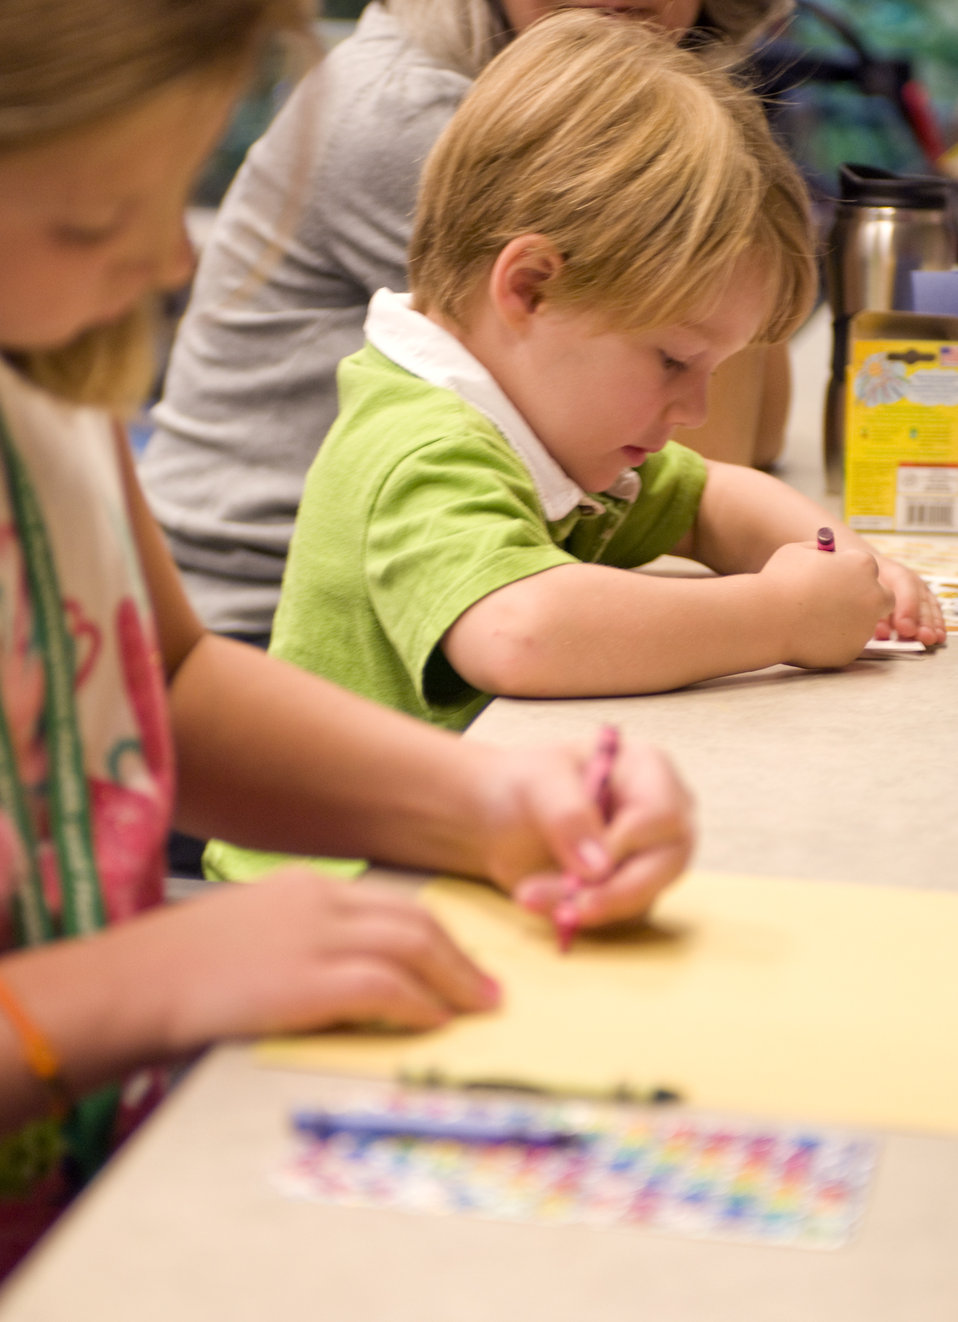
These children were seated at a table putting their creativity to work, using crayons to create colorful school-day projects.